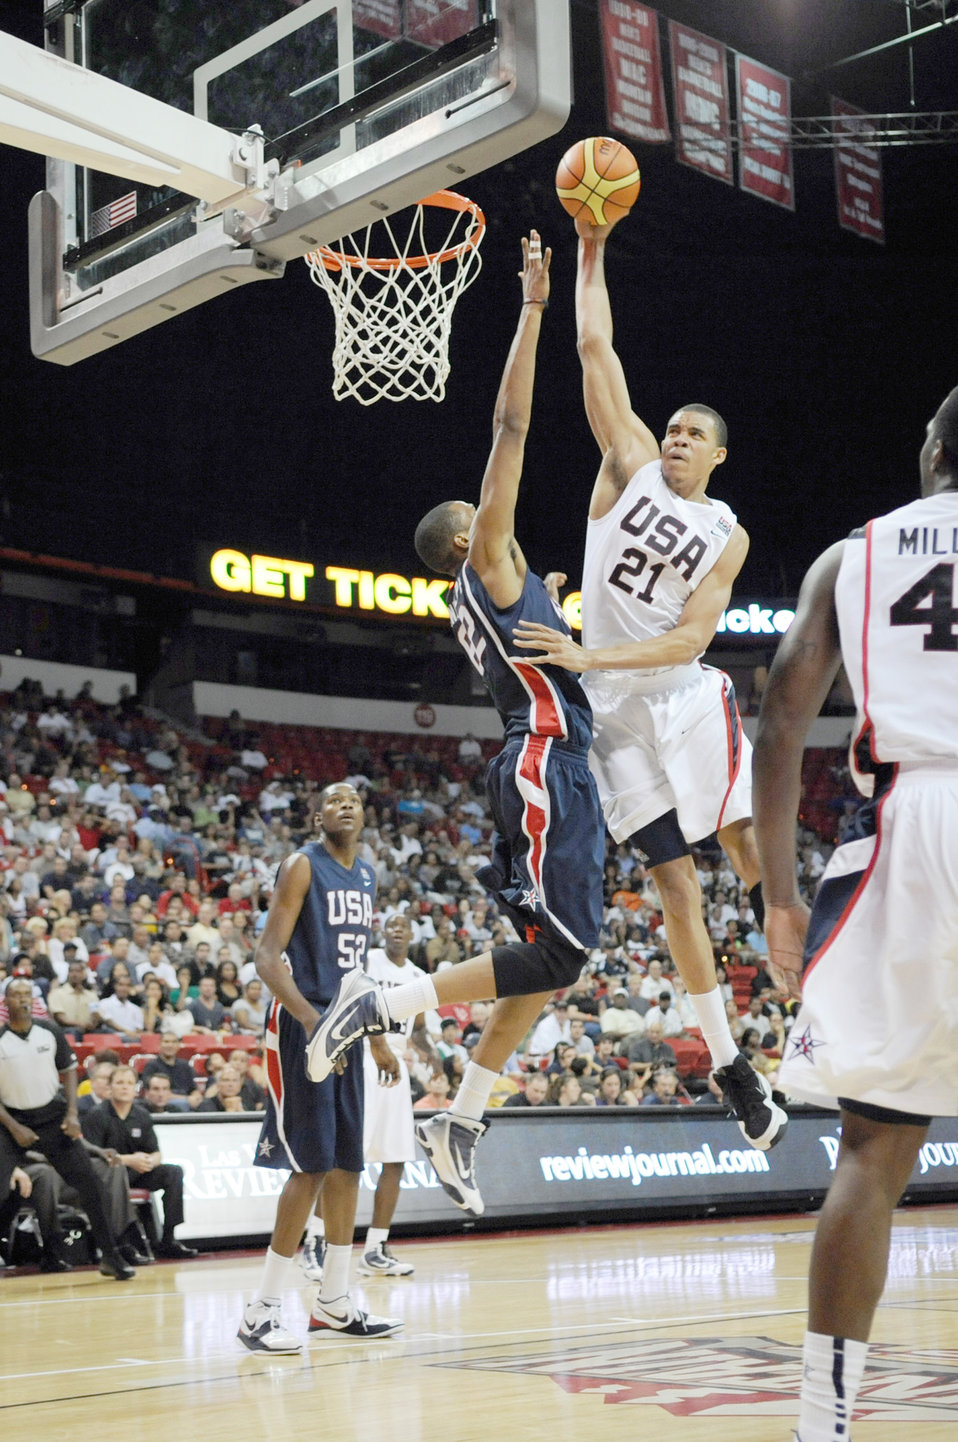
Nellis Airmen honored at USA Basketball exhibition

Washington Wizards forward JaVale McGee of the goes hard to the rim for a monster dunk over Golden State Warrior Anthony Randolph during the USA Basketball exhibition game July 25 at the Thomas and Mack Center in Las Vegas. Airmen from Nellis Air Force Base, Nev., were honored guests and invited to participate in the game pre-show and half-time activities.